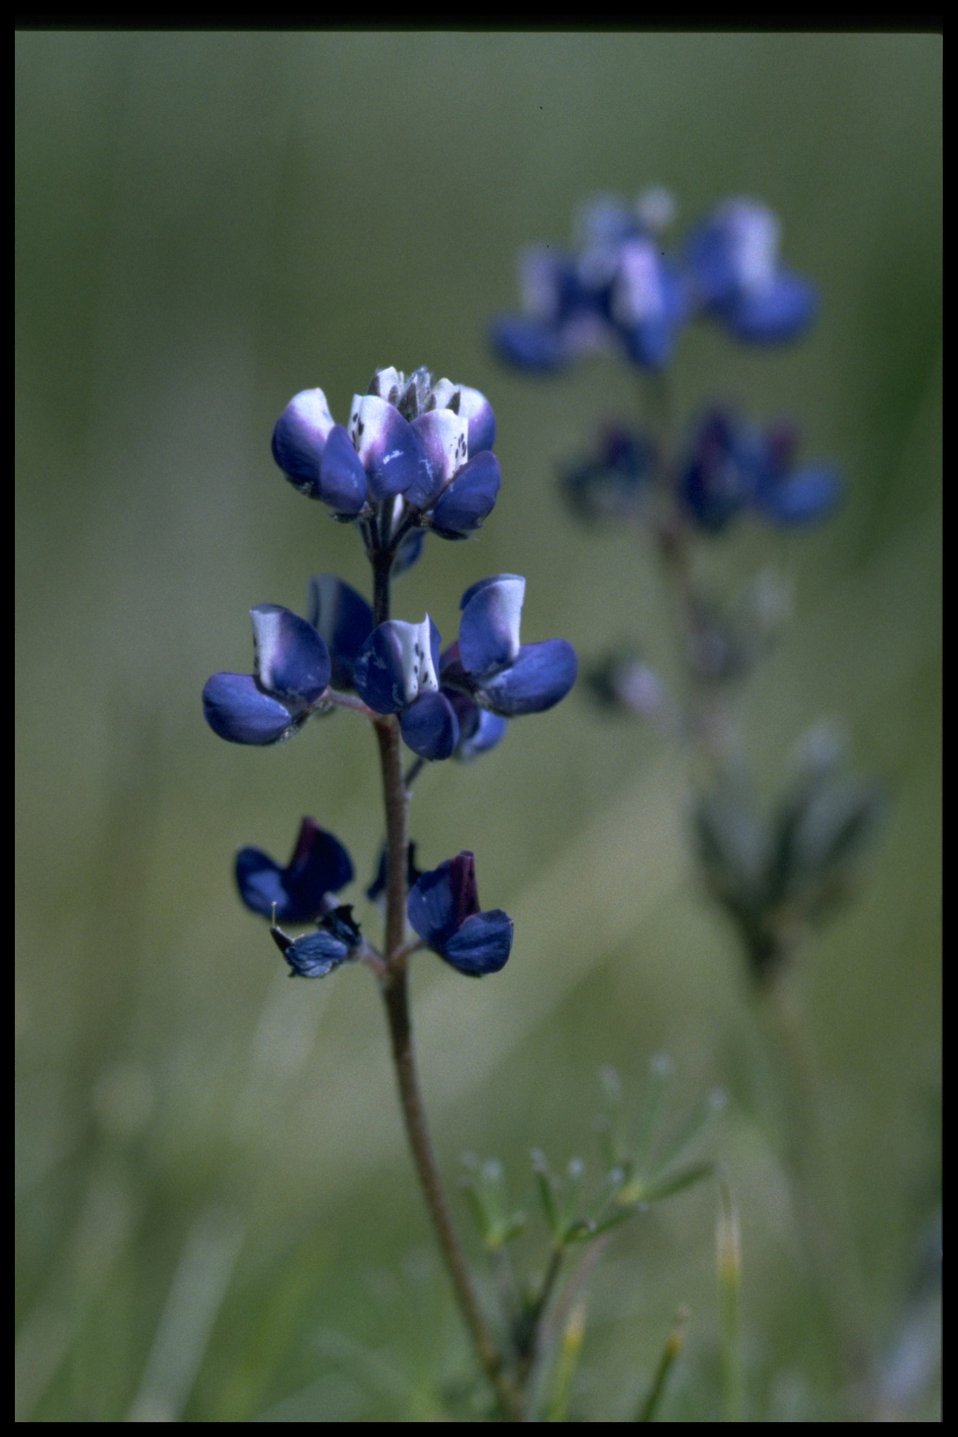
Closeup shot of Lupinus bicolor.